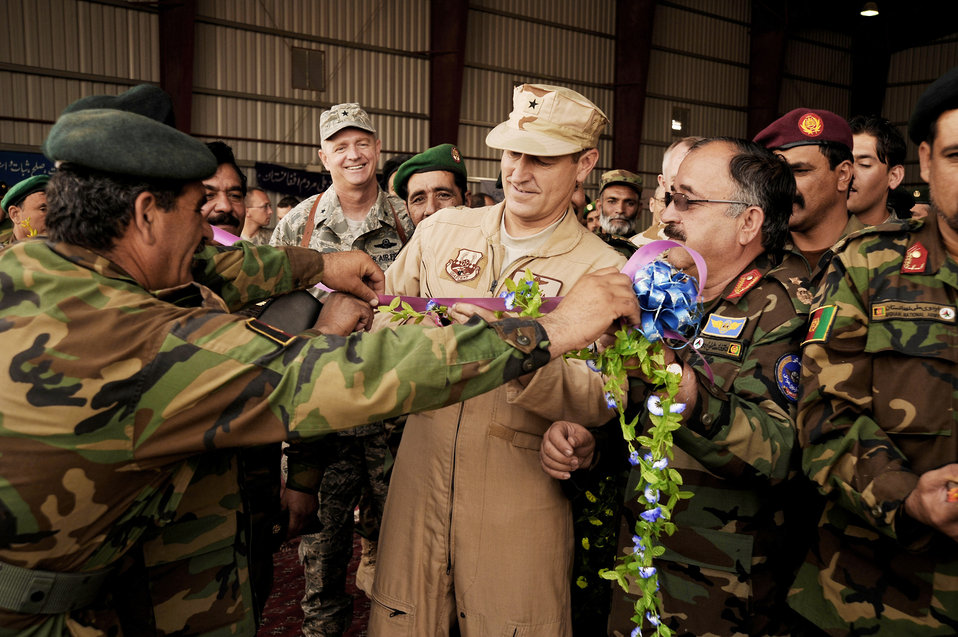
Wing Stand-Up for Afghans

Brig. Gen. Mike Boera helps cut a ceremonial ribbon at an Afghan National Army Air Corp wing activation Oct. 5, 2009, at Kandahar Airfield, Afghanistan. The wing is the ANAAC's second and supports Mi-17 helicopter operations and training. General Boera is the Commanding General of Combined Air Power Transition Force, Combined Security Transition Command-Afghanistan.